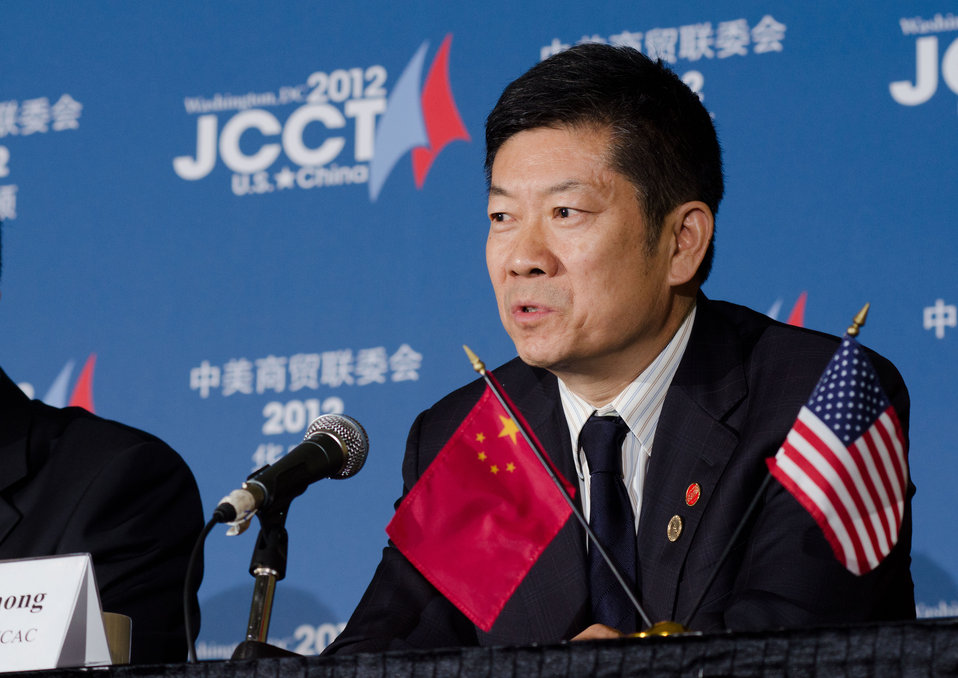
China’s Vice Minister of National Copyright Administration of China (NCAC) Yan Xiaohong answers questions from international news media journalists at the 23rd Session of the U.S. China Joint Commission on Commerce and Trade (JCCT) press conference at the Andrew W. Mellon Auditorium in Washington, D.C. on Wednesday, Dec. 19, 2012. The JCCT holds high-level plenary meetings on an annual basis to review progress made by working groups that focus on a wide variety of trade issues. These working groups meet throughout the year to address topics such as intellectual property rights, agriculture, pharmaceuticals and medical devices, information technology, tourism, commercial law, environment, and statistics.